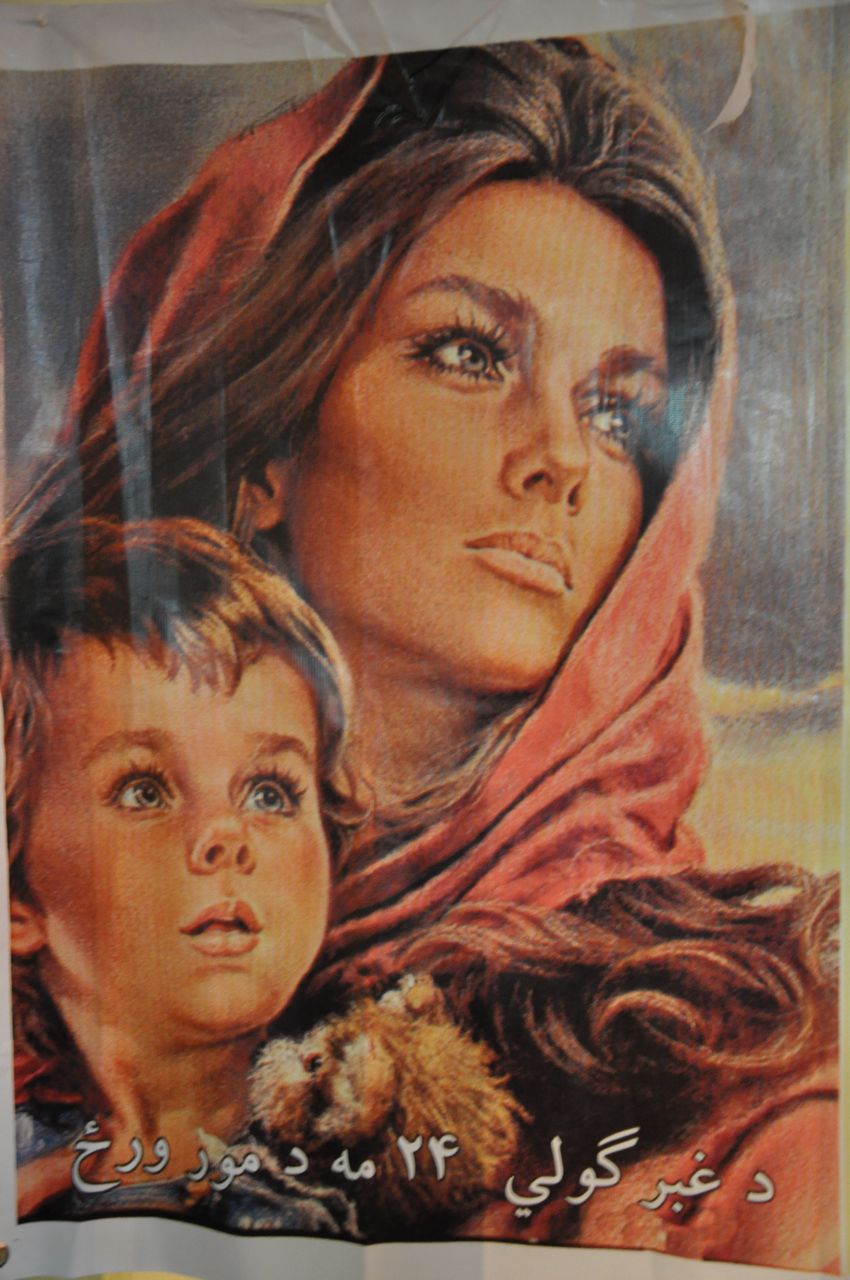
Mother's Day in Afghanistan